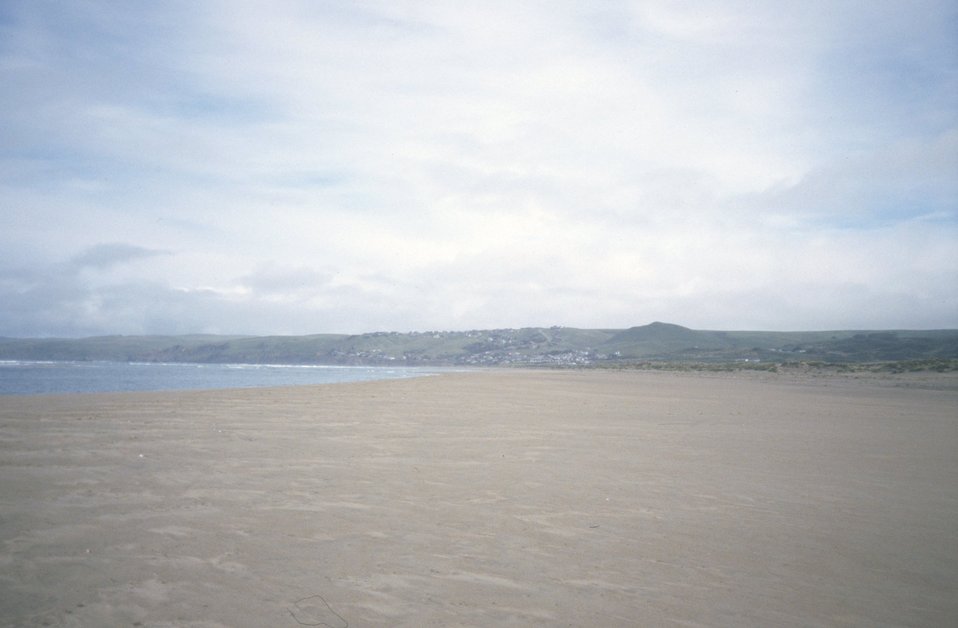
Dillon Beach